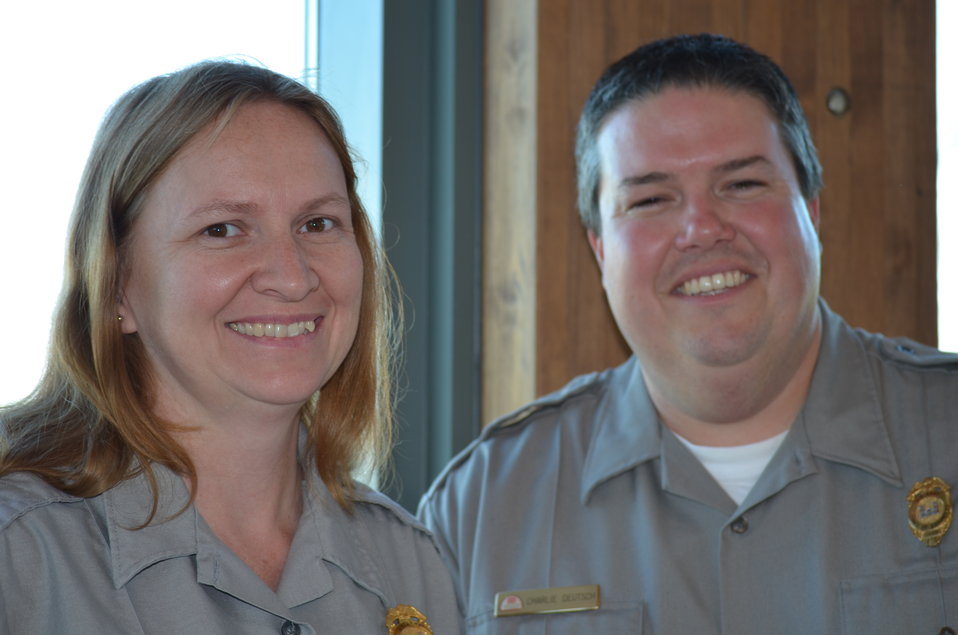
U.S. Army Corps of Engineers staff at Audubon Riverlands Center. The Audubon Center embodies a unique partnership with the U.S. Army Corps of Engineers Rivers Project Office within its Riverlands Migratory Bird Sanctuary. The sanctuary included 3700 acres of prairie marsh and forest, and provides excellent opportunities for Audubon and USACE to partner on education and outreach, conservation and recreational opportunities for the public. USFWS/Ashley Spratt